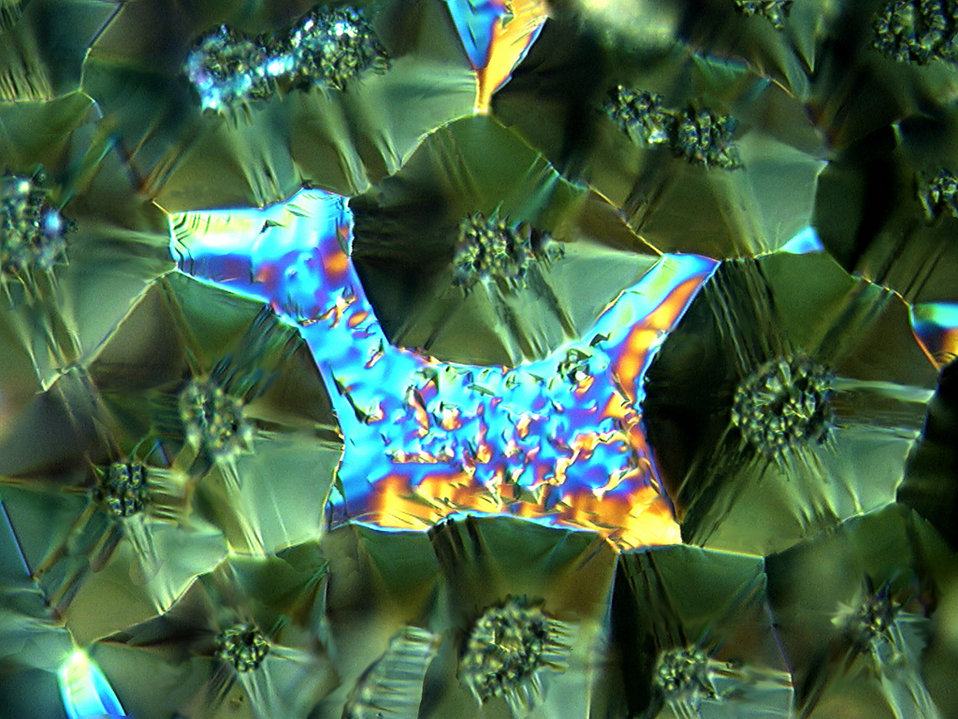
AT OAK RIDGE NATIONAL LABORATORY , AS THE SUN RISES OVER EASTERN EUROPE, THE INSTANTANEOUS NET ECOSYSTEM EXCHANGE OF CARBON DIOXIDE IS SHOWN IN THE EASTERN HEMISPHERE.

At Oak Ridge National Laboratory, zinc oxide is a material with applications in a whole range of areas- including electronics, optics, nuclear science and medicine. Here, chemical reactions produced by high temperature treatment in zinc metal vapor have produced morphological changes on the surface of a zinc oxide single crystal. Optical interference contrast microscopy reveals the zinc oxide surface topology in the form of color variations. This morphological information would be destroyed by traditional polishing of the sample surface.